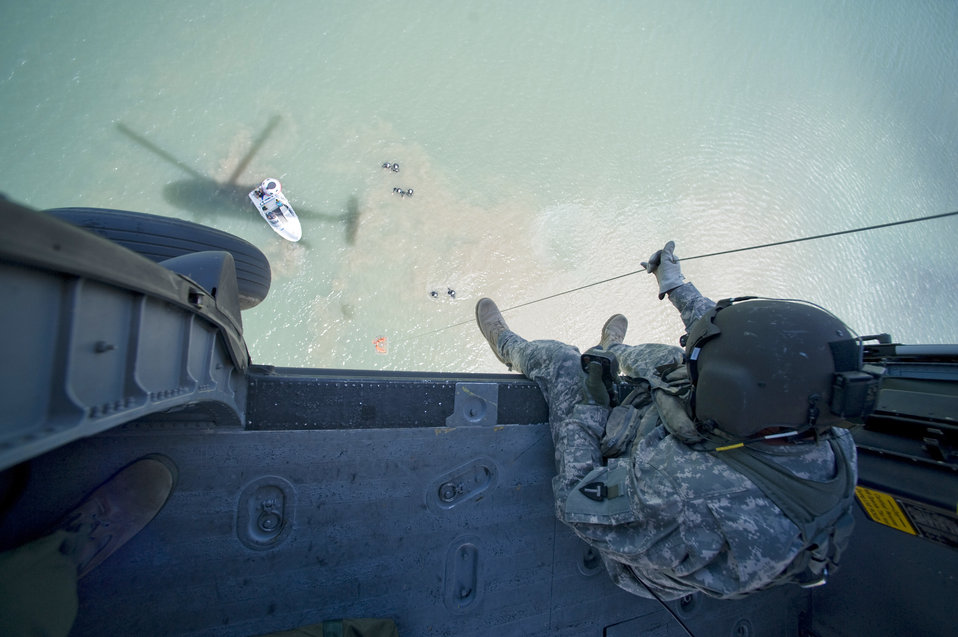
Swim to the basket

U.S. Army Sgt. Teddy Cole lowers a water rescue basket during refresher aircrew water survival training at Canyon Lake, Texas. Sergeant Cole is a UH-60 Blackhawk crew chief assigned to the 149th Aviation Regiment in San Antonio. The refresher training was conducted for members of the 149th Fighter Wing also based in San Antonio. Both units belong to the Texas National Guard.